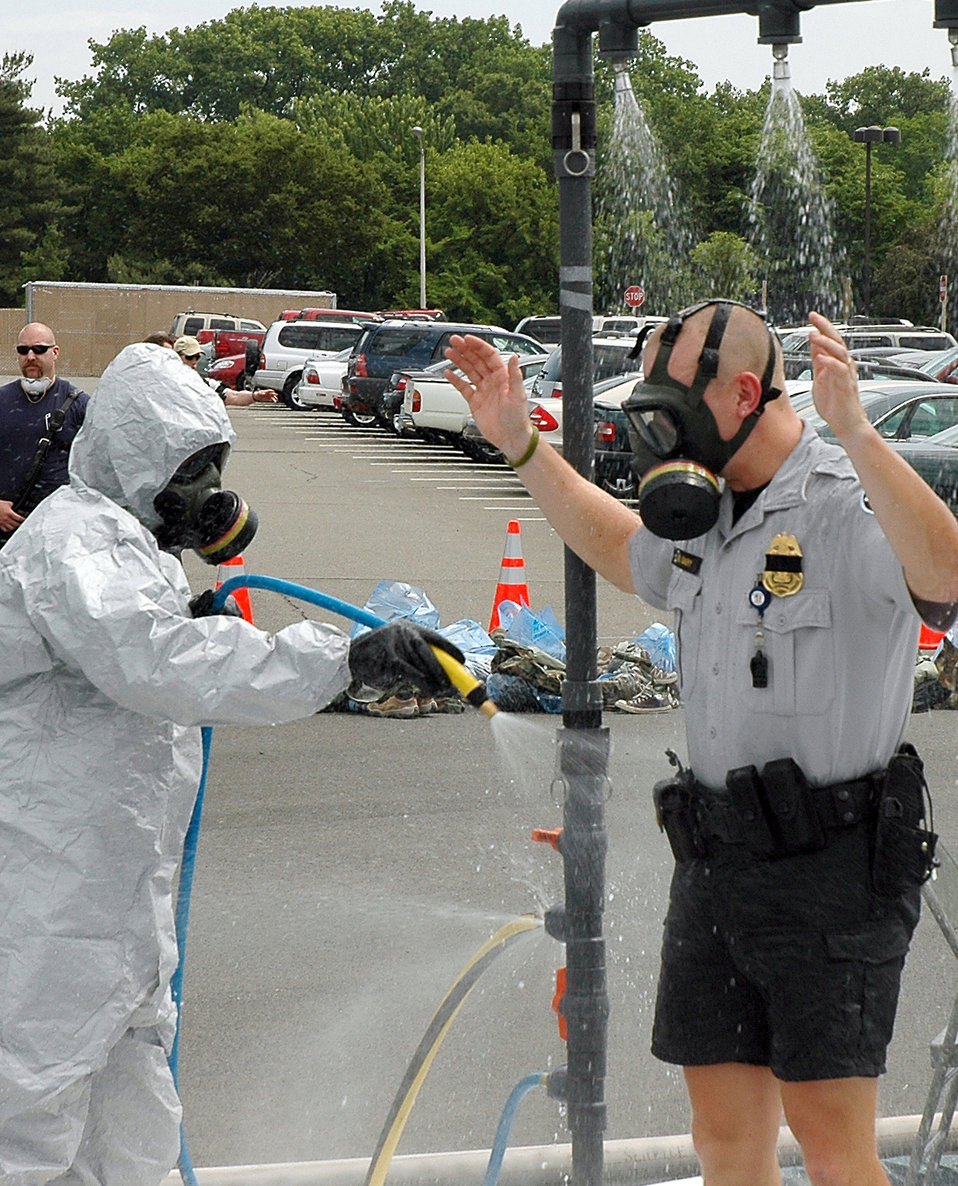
National Capitol Region first responders train for Pentagon disaster

A member of the Pentagon Force Protection Agency is decontaminated during an exercise at the Pentagon on Wednesday, May 17, 2006. During exercise Gallant Fox 06, officials from Washington D.C. area fire, emergency medical service, and police departments; military members; and members of the Pentagon Force Protection Agency participated in the exercise, which included decontamination and medical processing of victims of a simulated anthrax attack at the Pentagon.